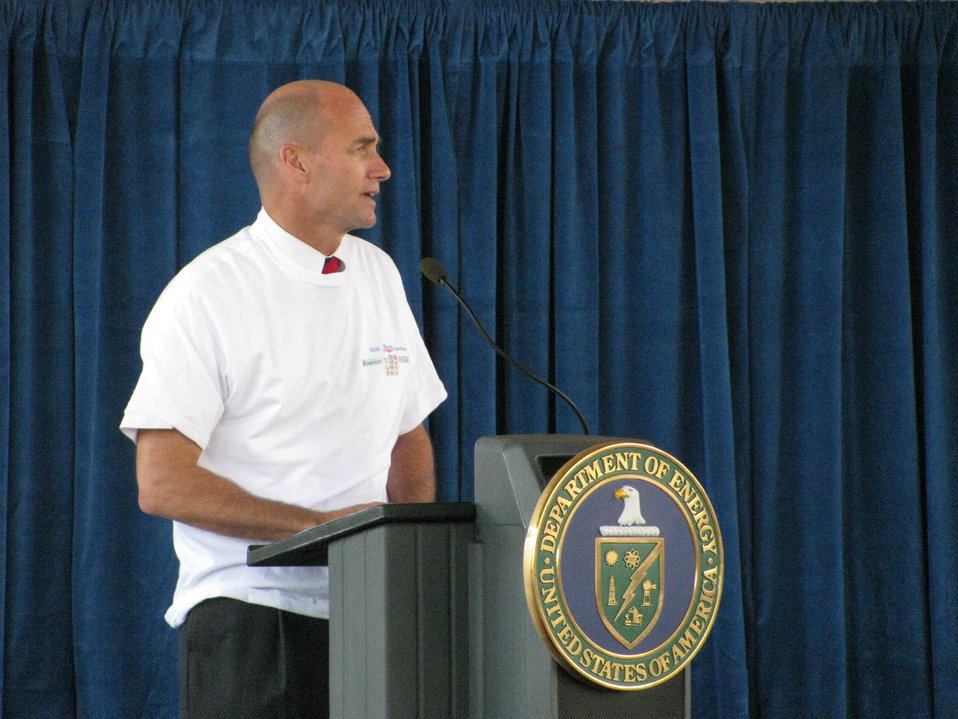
Clu lab pics 003